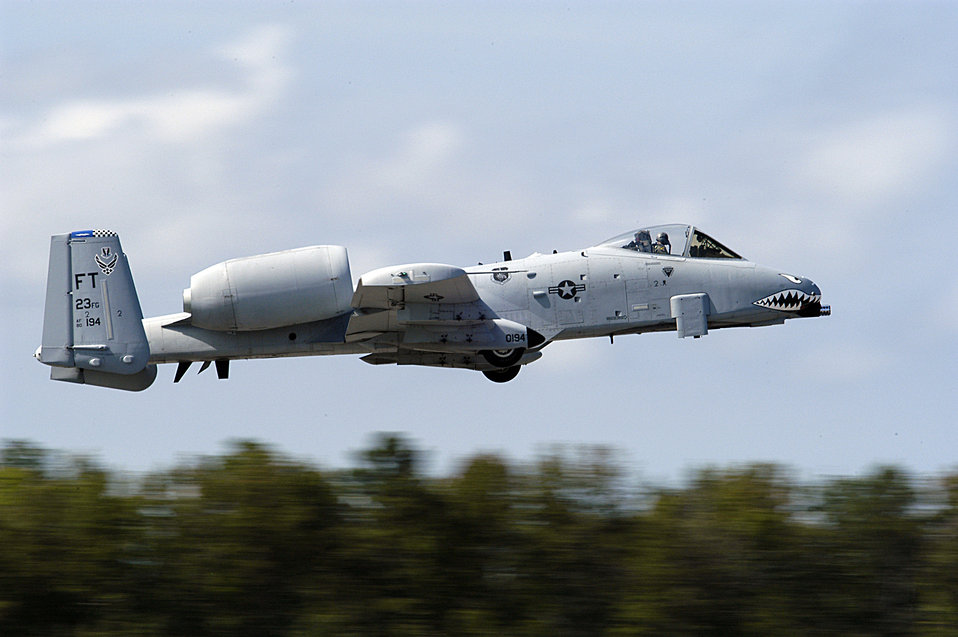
NAVAL AIR STATION OCEANA, Va. -- A U.S. Air Force A-10 Thunderbolt II takes off for a flight demonstration at the 2004 "In Pursuit of Liberty" air show here Sept. 25. The air show showcased civilian and military aircraft from the nation's armed forces, which provided many flight demonstrations and static displays.